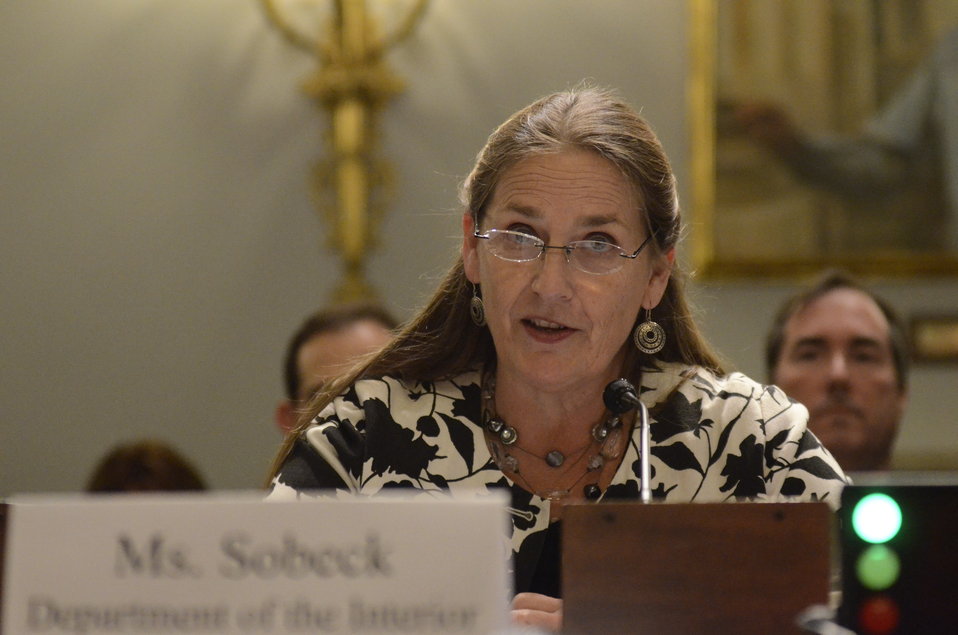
Interior Department Deputy Assistant Secretary for Fish and Wildlife and Parks Eileen Sobeck testifies on Retailers & Entertainers Lacey Implementation & Enforcement Fairness Act & Freedom from Over-Criminalization & Unjust Seizures Act at the Longworth House Office Building in Washington, D.C. on Tuesday, May 8, 2012.